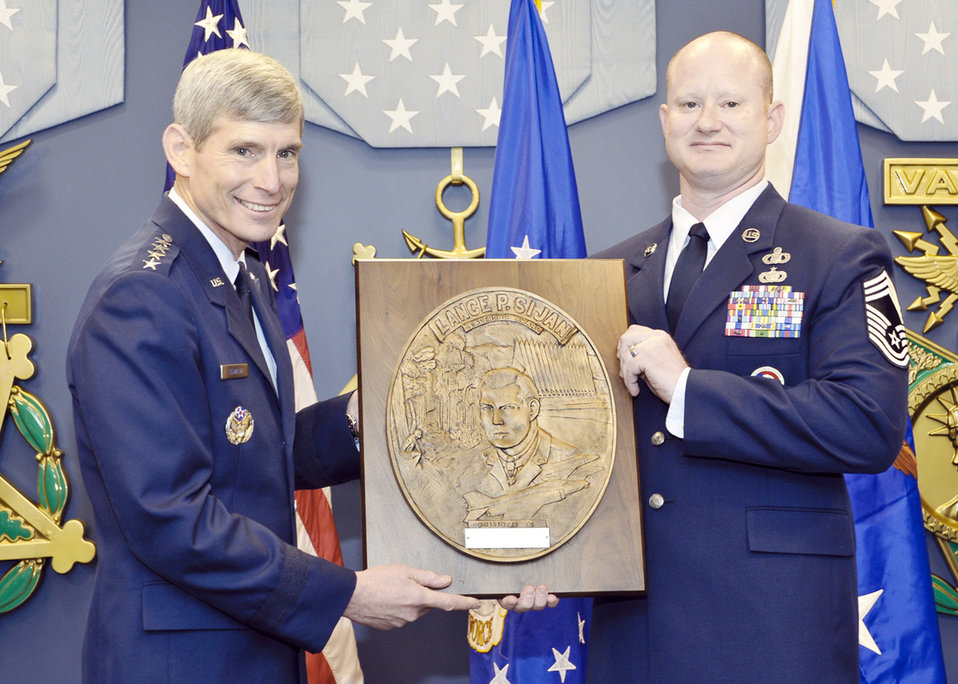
Sijan Award

Air Force Chief of Staff Gen. Norton Schwartz presents the Capt. Lance P Sijan Air Force Leadership Award to Chief Master Sgt. Michael Bobbitt Nov. 18, 2009. The Sijan Award recognizes the accomplishments of officer and enlisted Airmen who have demonstrated the highest qualities of leadership in the performance of their duties and the conduct of their lives.